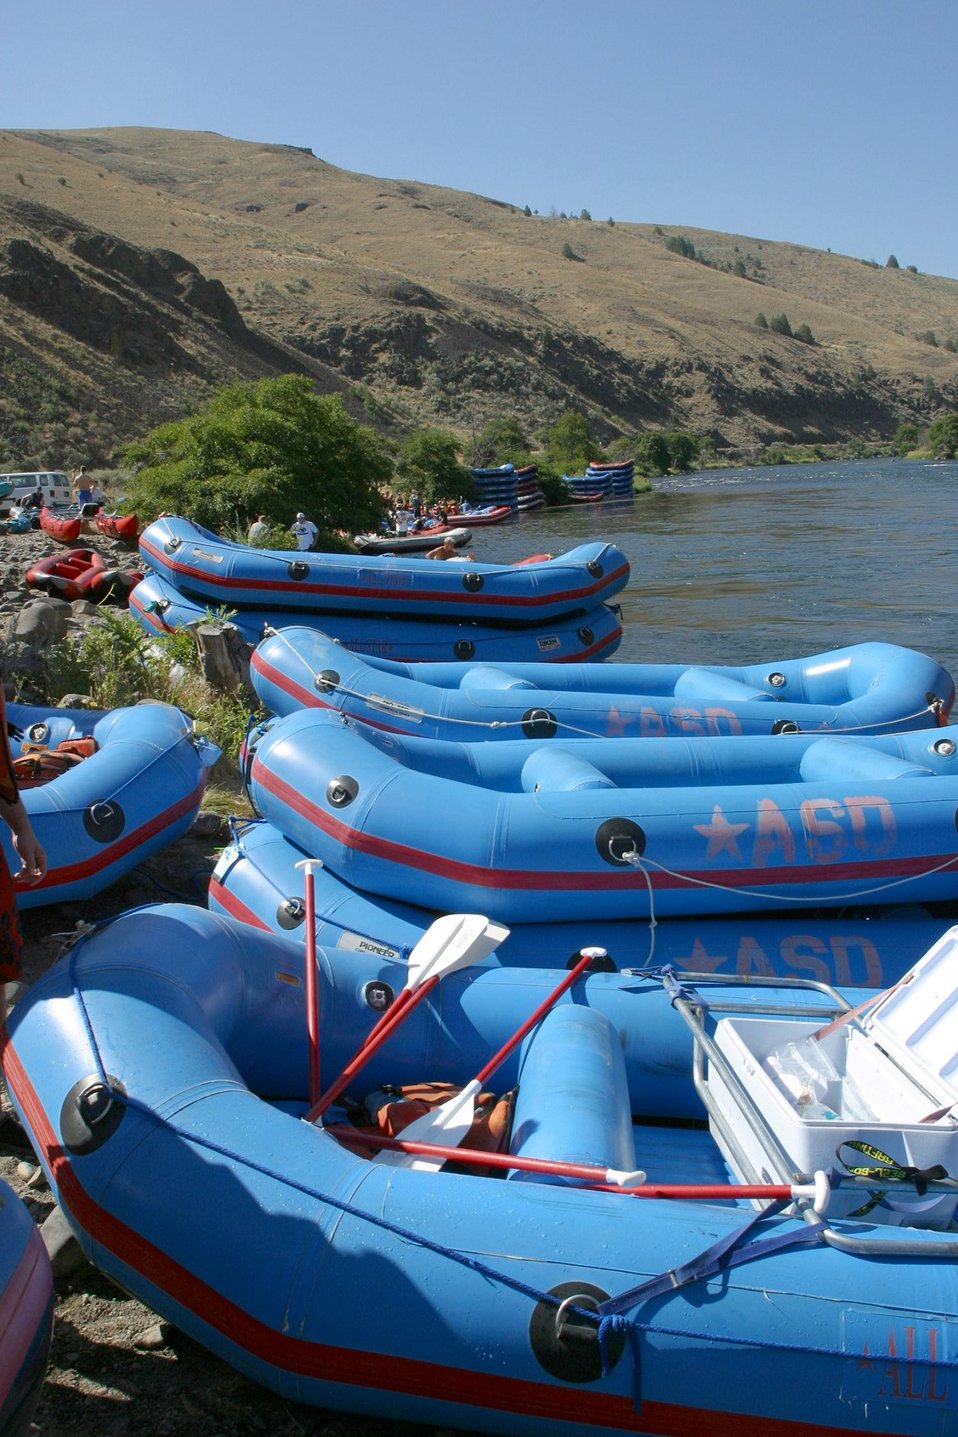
Over 200,000 people a year float the Lower Deshutes River.